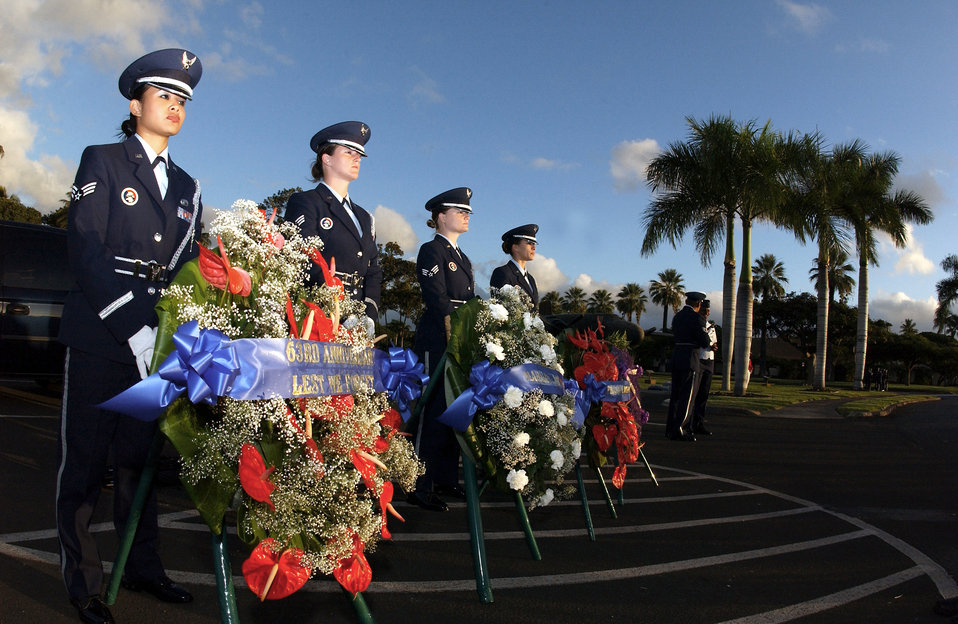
Paying tribute

HICKAM AIR FORCE BASE, Hawaii -- Airmen of the base honor guard here prepare to place memorial wreaths during the ceremony commemorating the 63rd anniversary of the attack on Hickam Field on Dec. 7, 1941. The Airmen (from left) are Senior Airmen Jodi Asprer, April Bonaparte and Leslie Ocasio-Gonzalez, and Airman 1st Class Jennifer Kincaid.